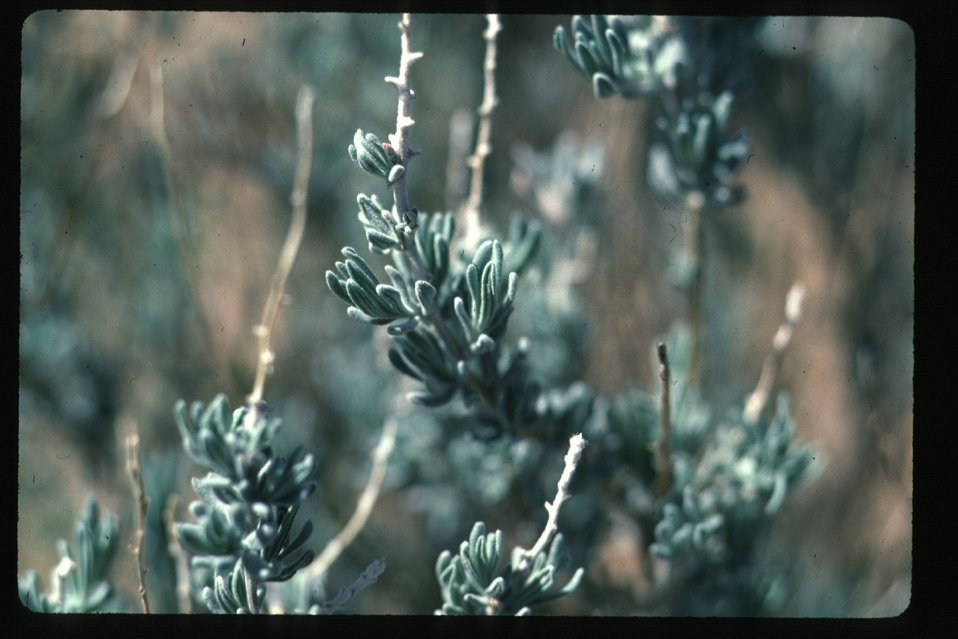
Cela winter fat Brush, grasses Wildflowers